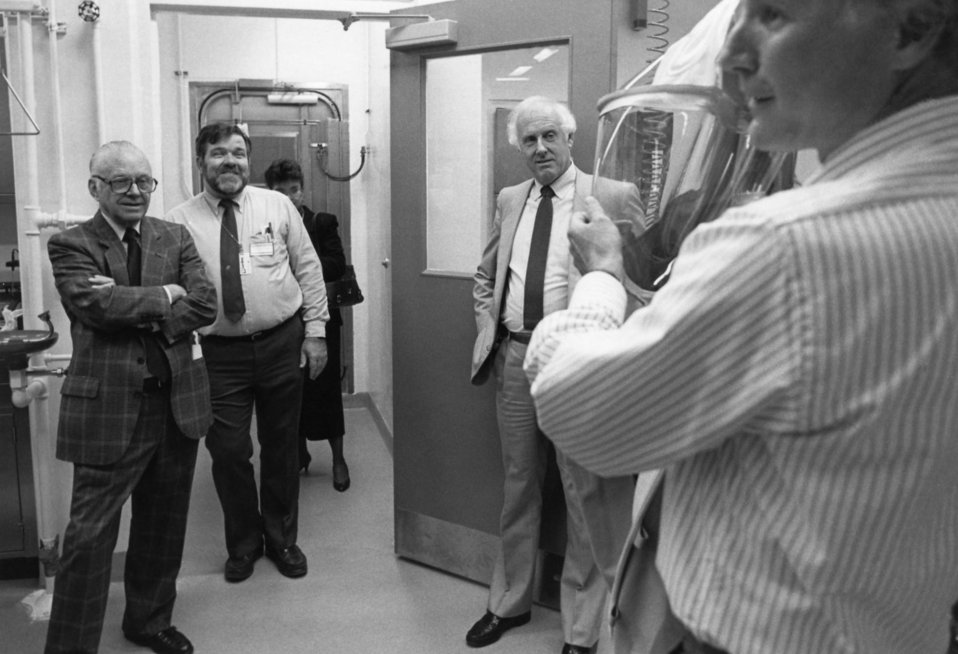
This photograph depicted members of the Clifton Corridor Task Force touring a Centers for Disease Control virology building in 1988.